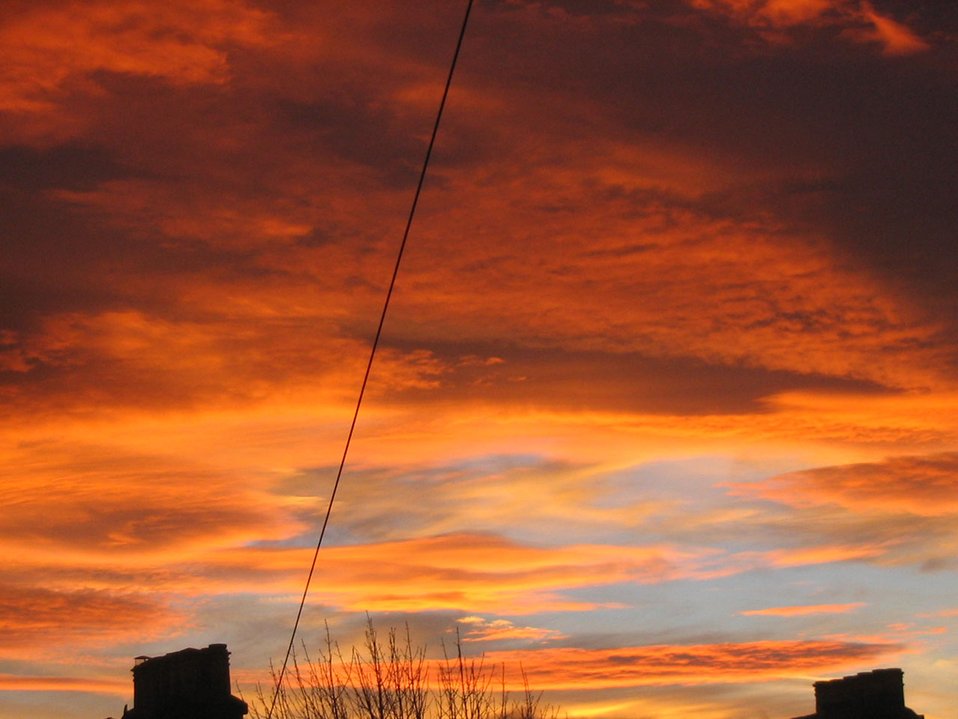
Sky at sunset

Dark orange sky at sunset.